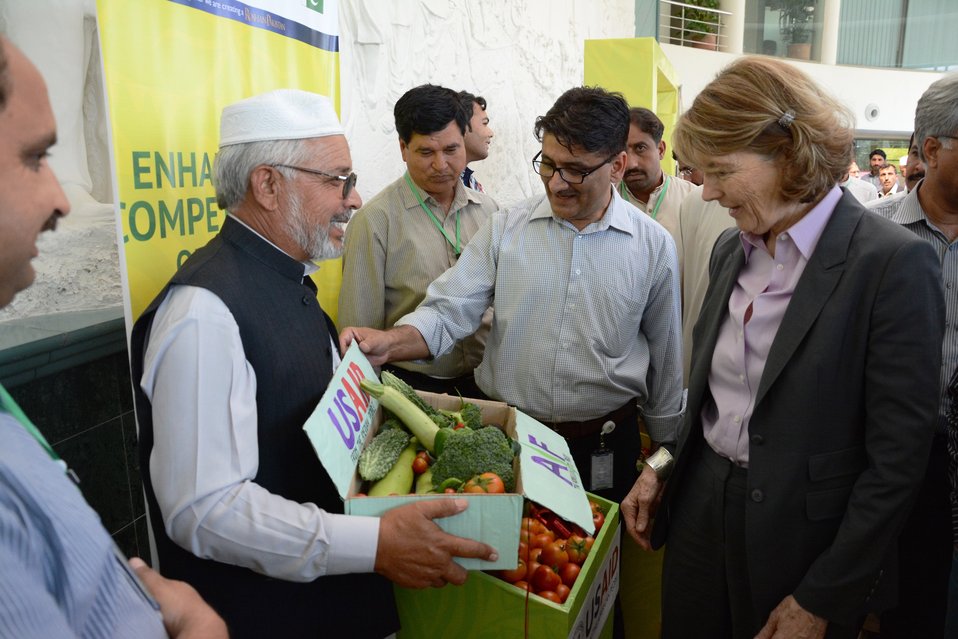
Picture (2) Pakistan vegetable Fair 2014 Islamabad May 15 2014